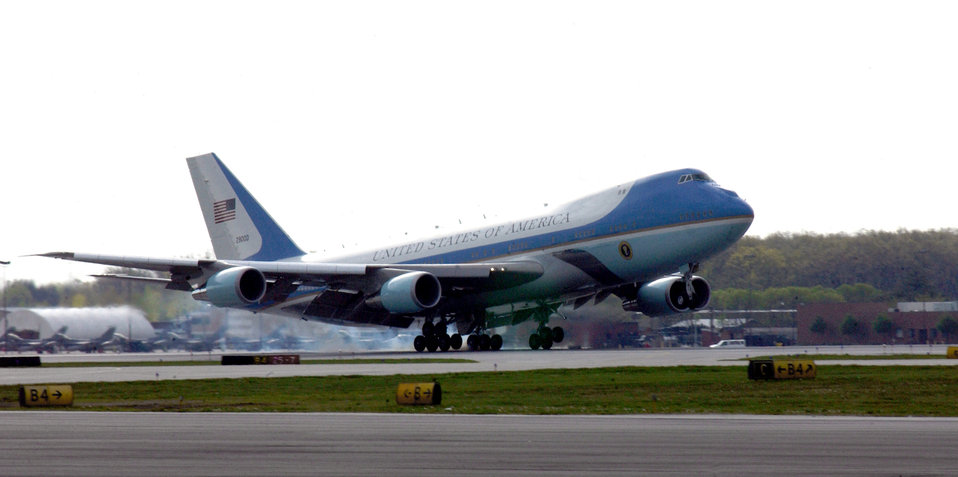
Air Force One

TOLEDO, Ohio -- Air Force One lands here on May 4. The mission of the VC-25 aircraft -- Air Force One -- is to provide air transport for the president of the United States. The presidential air transport fleet consists of two specially configured Boeing 747-200B's -- tail numbers 28000 and 29000 -- with the Air Force designation VC-25. When the president is aboard either aircraft, or any Air Force aircraft, the radio call sign is